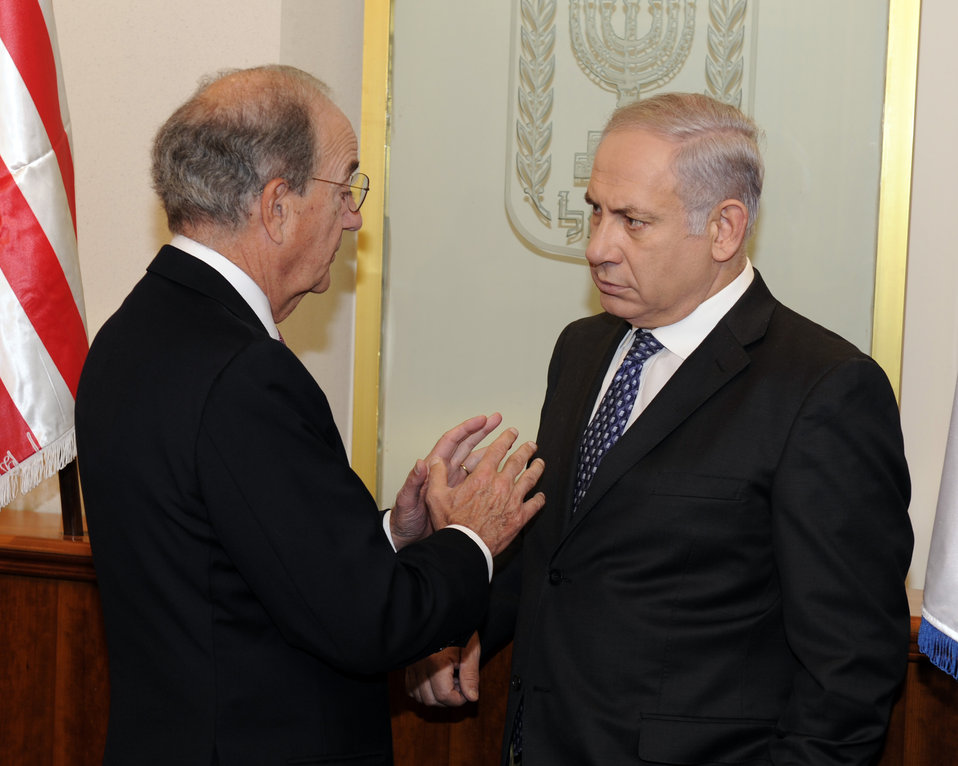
Special Envoy Mitchell Discusses Middle East Issues With Israeli Prime Minister Netanyahu

U.S. Special Envoy for Middle East Peace George J. Mitchell discusses Middle East issues with Israeli Prime Minister Benjamin Netanyahu at the Prime Minister's office in Jerusalem on October 1, 2010.